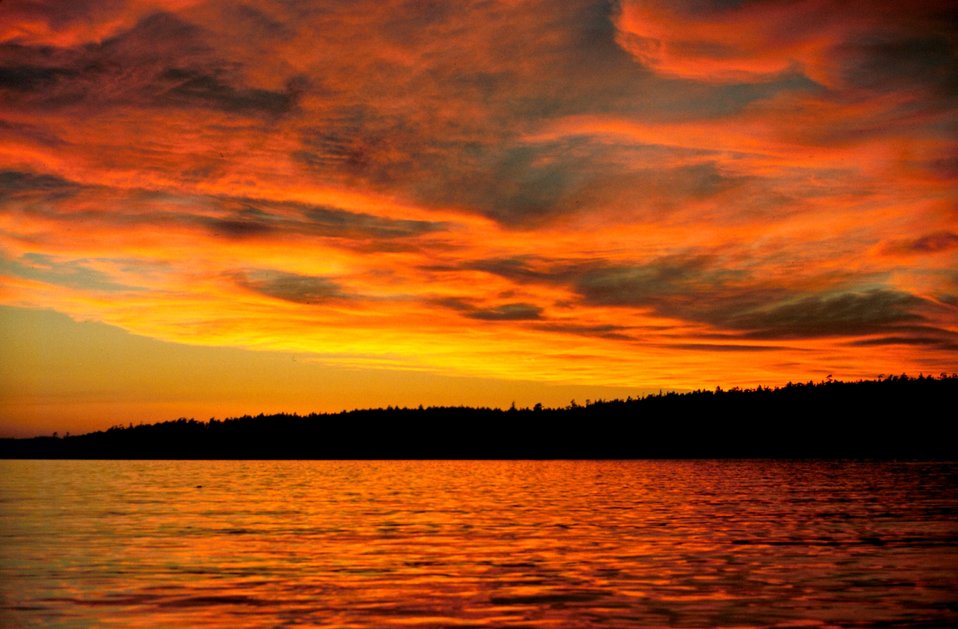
San Juan Islands sunset.